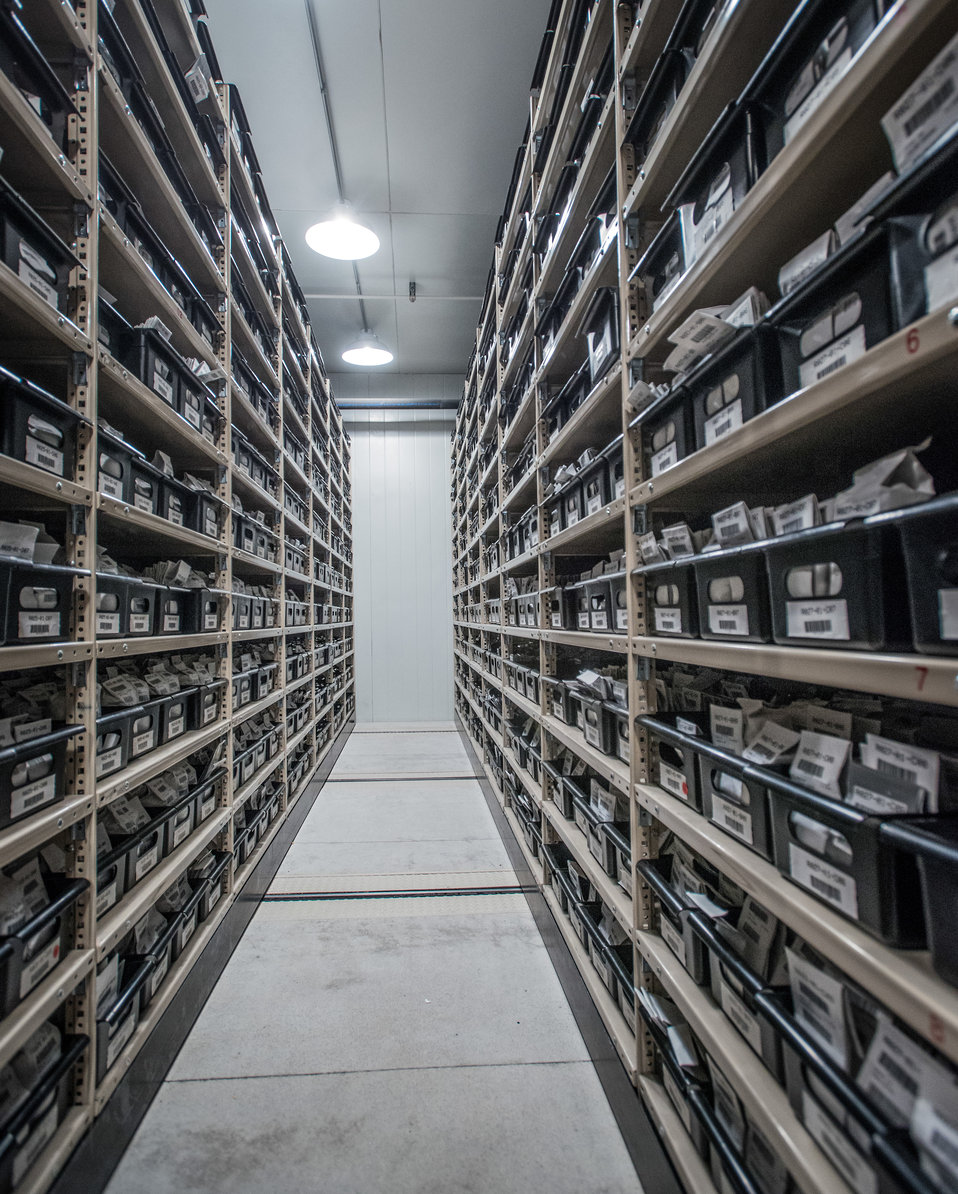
This is the U.S. Department of Agriculture's (USDA) Agriculture Research Service (ARS) National Center for Genetic Resources Preservation (NCGRP) National Plant Germplasm System (NPGS) cold storage vault, in Ft. Collins, CO on Wednesday, Nov. 6, 2013. This secure, long-term storage facility contains nearly 1 million samples of more than 13,200 plant species from the NPGS and from other international plant gene banks, as well as other U.S. government land management agencies. Most of the samples are preserved in the form of seeds. Some germplasm is also preserved as buds, cuttings, and tissue cultures. The 20 NPGS gene banks across the U.S. safeguard, study, and distribute these plant samples, each collected at a particular time and place, including modern and old varieties, wild relatives of crop plants, and genetic stocks. Seeds are packaged in moisture proof foil bags for cold vault storage at -18 °C (0 °F). The packets of seeds are organized in high-density rolling shelves. NCGRP seed preservation protocols are based on more than 50 years of experience and research. The facility opened in 1958 and was expanded in 1992. Preservation of diversity of plant genetic resources helps farmers and conservationists face challenges from climatic change, the spread of new diseases, destructive pests, and abiotic stresses such as drought and salinity.